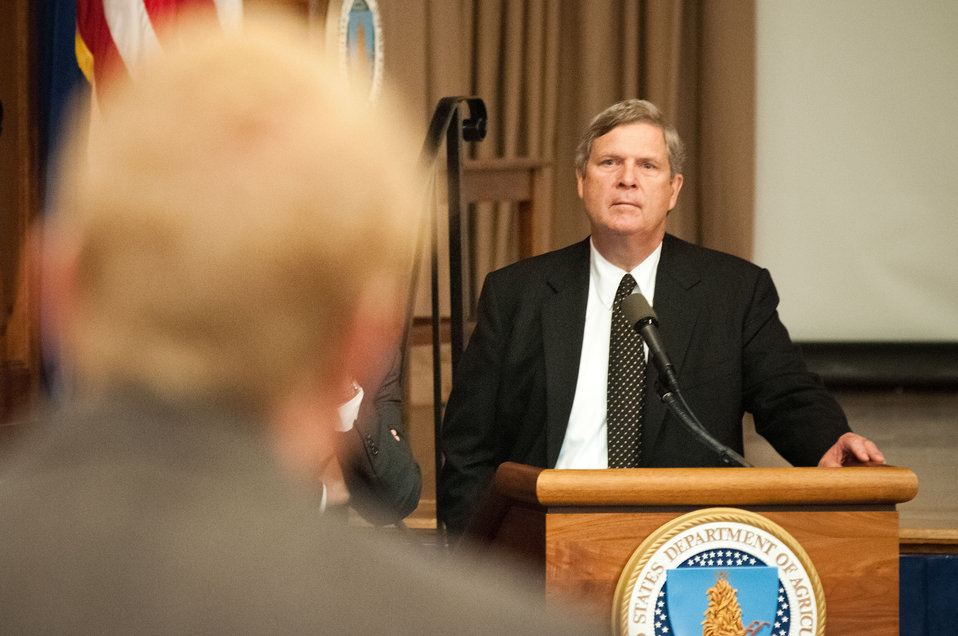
Agriculture Secretary Tom Vilsack listens to questions posed by members of the National Farmers Union at the U.S. Department of Agriculture (USDA) in Washington, D.C. on Monday, Sept.10, 2012. Secretary Vilsack discussed the economics of agriculture, conservation, exports, Rural America and the 2012 Farm Bill.